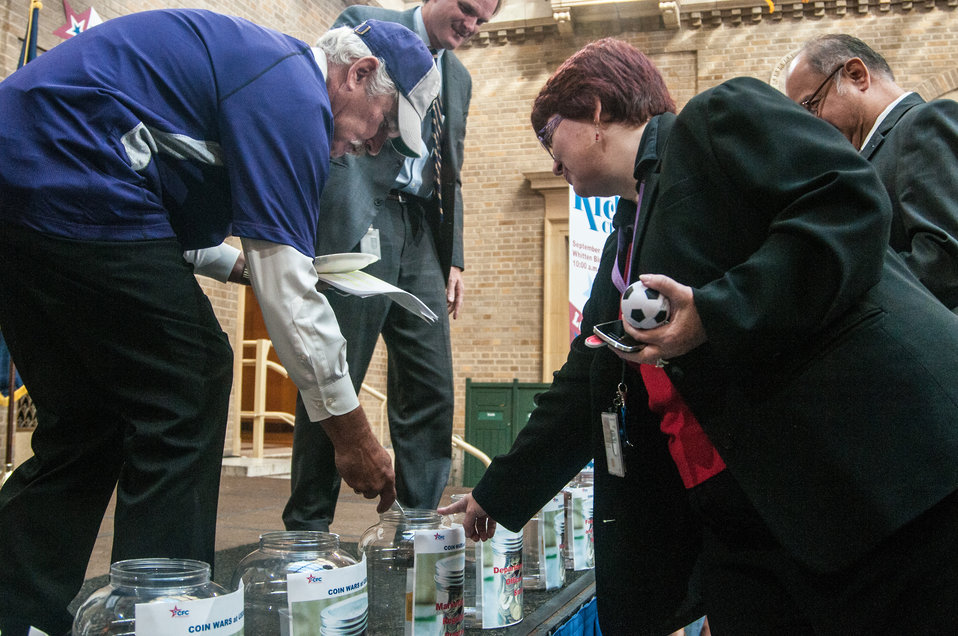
U.S. Department of Agriculture (USDA) Farm and Foreign Agricultural Services Under Secretary and Vice Chair of the USDA CFC Campaign Michael T. Scuse and others get competitive in the 2013 USDA Combined Federal Campaign fund raising challenge called Coin Wars, on Tuesday, Sept 17, 2013 in the Whitten Building, U.S. Department of Agriculture (USDA), Washington, D.C. The Coin Wars Challenge pits mission areas against each other for coin donations. Pennies were worth positive points and all other coins had negative point values based on their denomination. Those with a competitive nature could lower the point score of another organization by loading their container with silver coins, and their own organization with pennies. Other event activities attracted employees on personal time to participate in fund raising activities that generated donations and donation registrations that will help support charities. The Combined Federal Campaign (CFC) is the largest and most successful workplace charitable giving drive in the world. CFC is the only authorized charitable organization solicitation of Federal employees in their workplaces. CFC is structured to support and to promote philanthropy through a voluntary program that is cost-efficient and effective in providing all Federal employees the opportunity to impact the CFC charitable interest of their choosing. For more information about CFC, please see www.usda.gov/wps/portal/usda/usdahome?navid=USDA CFC USDA Photo by Lance Cheung.